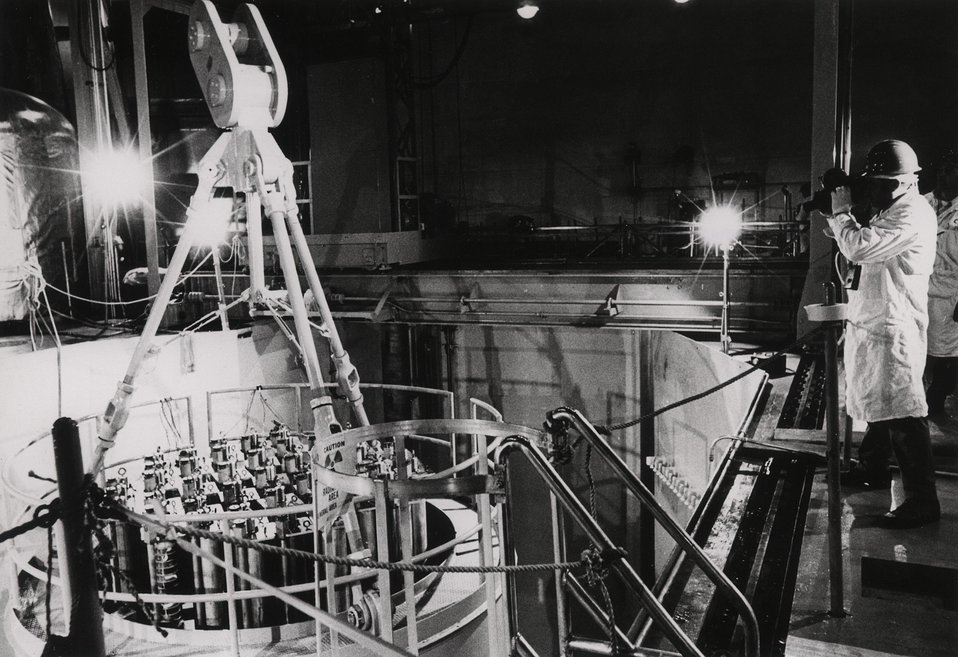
Haddam Neck-lifting of the reactor head takes place during a shutdown for refueling.